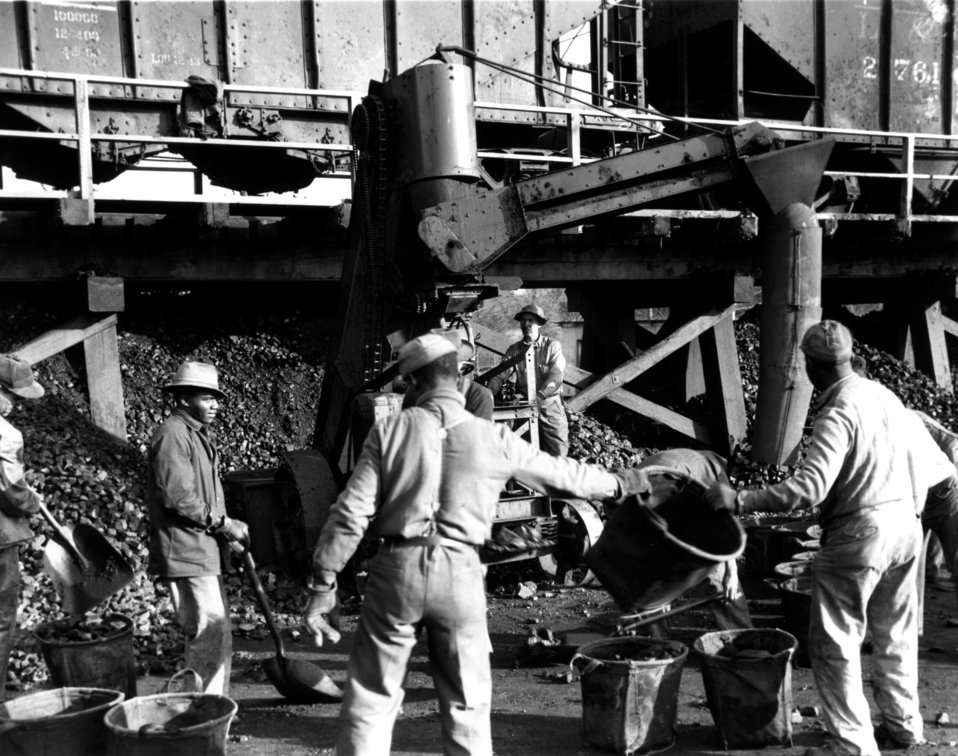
Business activity at Oak Ridge